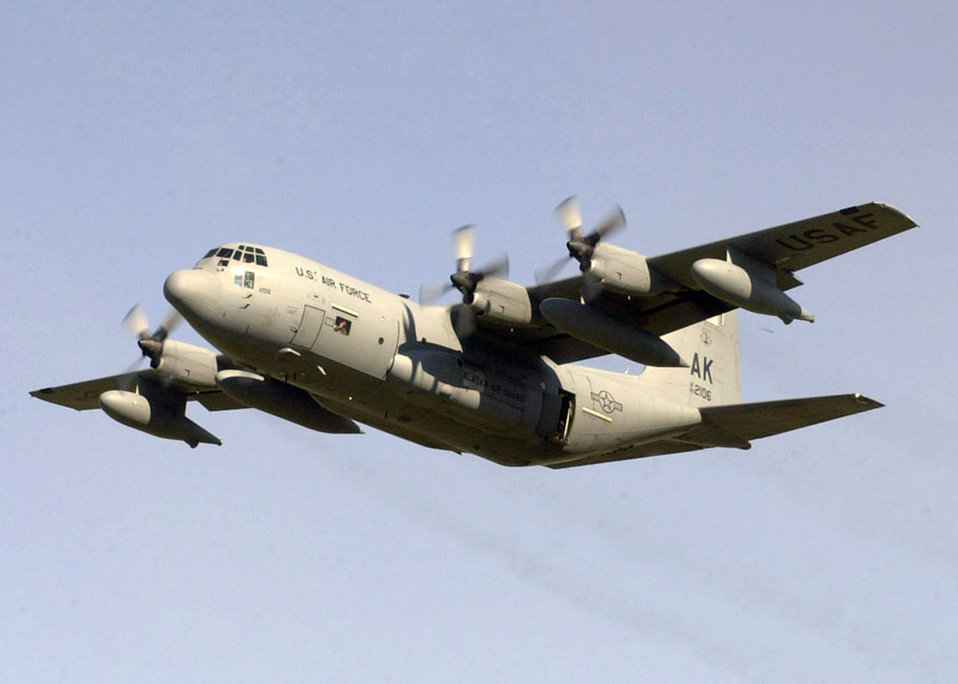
Medical Evacuation

An Alaska Air National Guard HC-130 aircraft like this one from the 211th Rescue Squadron, with pararescuemen aboard from the 212th Rescue Squadron, evacuated an injured British Sailor March 21 from Deadhorse to Anchorage where he received medical treatment. The Sailor, assigned to Royal Navy submarine HMS Tireless, was injured during a deadly explosion while the vessel operated in Arctic waters north of Prudhoe Bay.